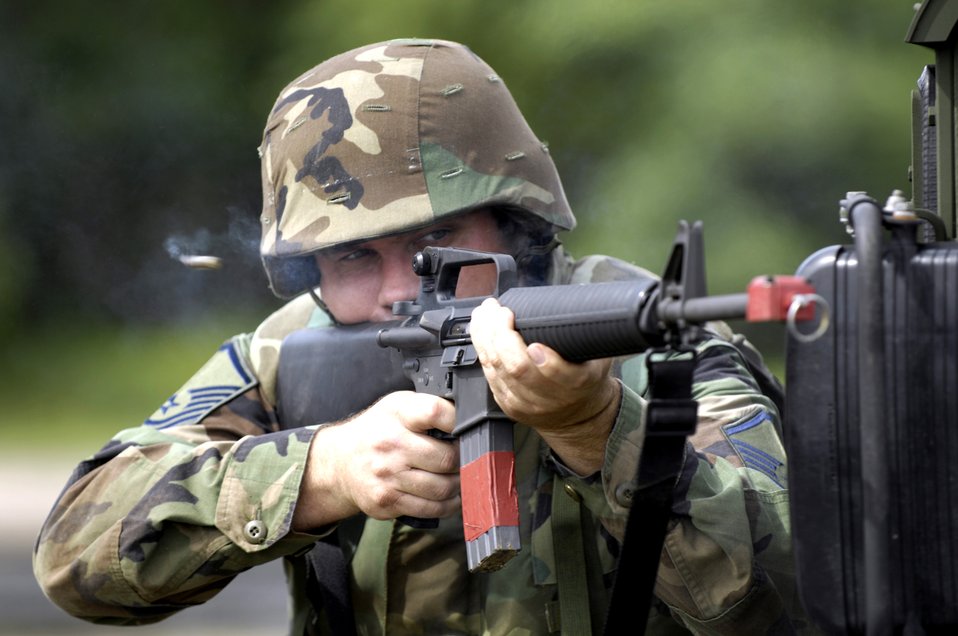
Combat course prepares Airmen for AEF

An Airman from the 15th Airlift Wing returns fire during convoy training Nov. 3 at a 3-day Expeditionary Combat Skills training course at Hickam Air Force Base, Hawaii. The Airmen are preparing for the Air Expeditionary Force 5/6 cycle.